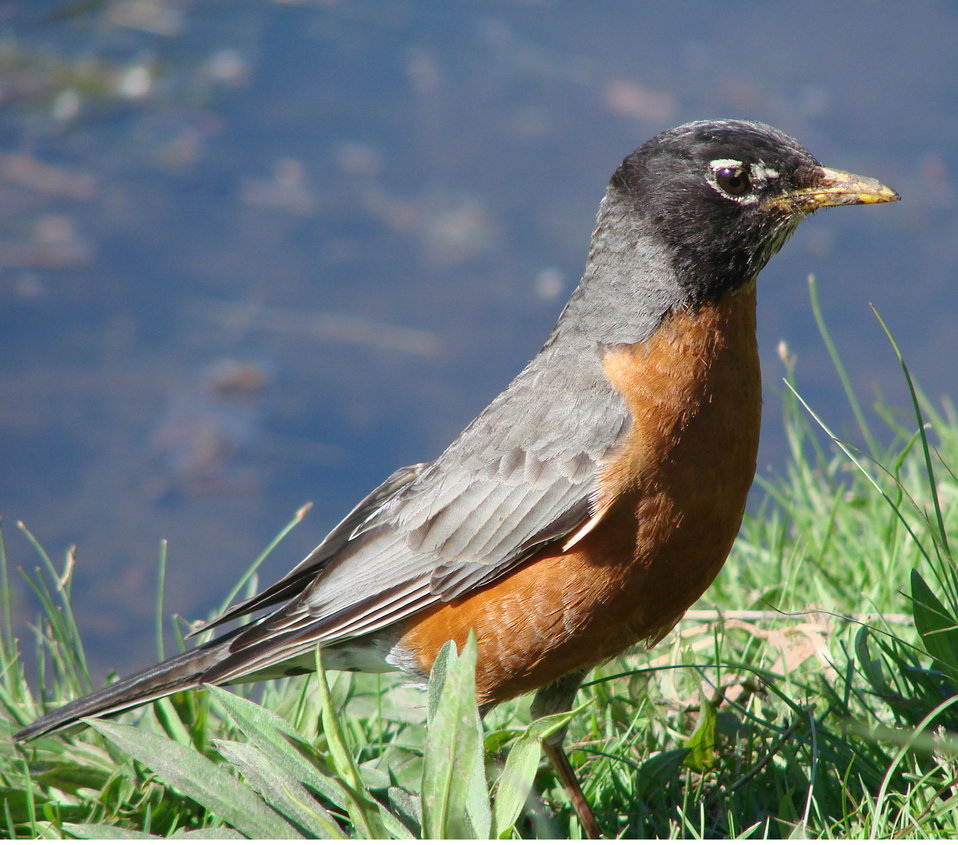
The lil robin

Side view of a robin walking on the shore near the lake..